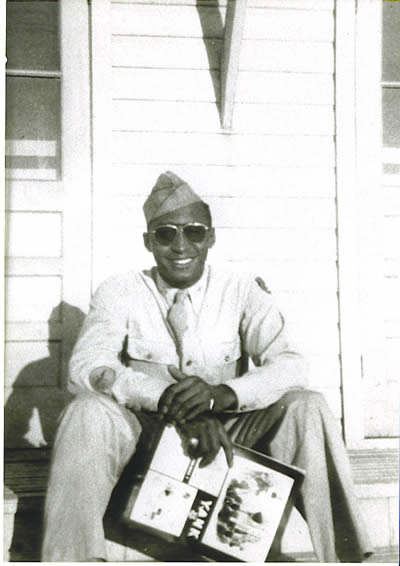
Lt. Oliver Goodall, a Tuskegee Airman, was refused entry to all white officer's club